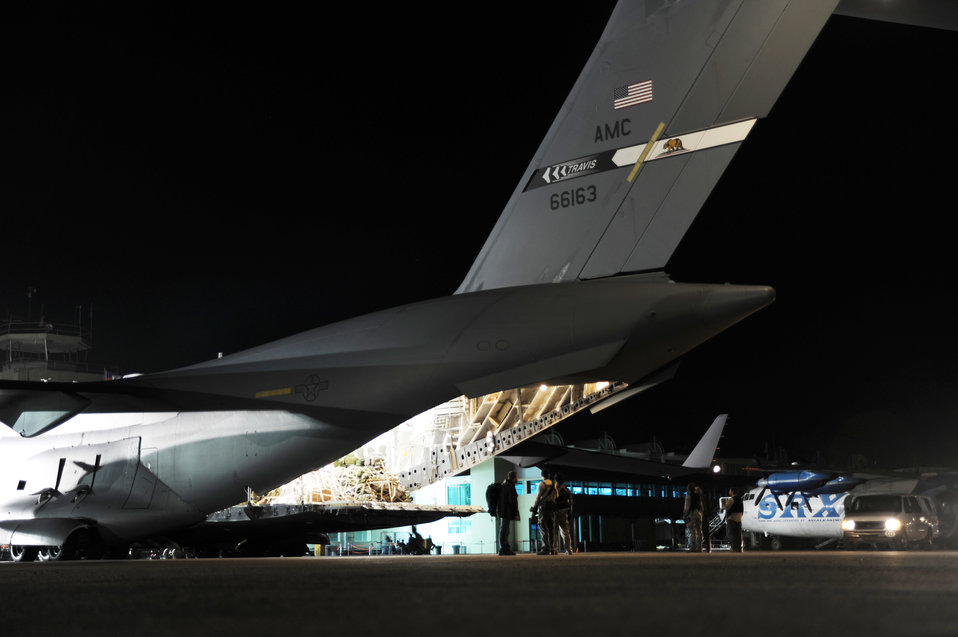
Charleston Airmen ship emergency funds to U.S. Embassy in Haiti

A special mission shipment of money waits to be unloaded from a C-17 Globemaster III from Travis Air Force Base, Calif., Jan. 22, 2010, at Port-au-Prince, Haiti. The cargo was sent from Charleston AFB, S.C., along with members of security forces and intelligence squadrons to support Operation Unified Response.